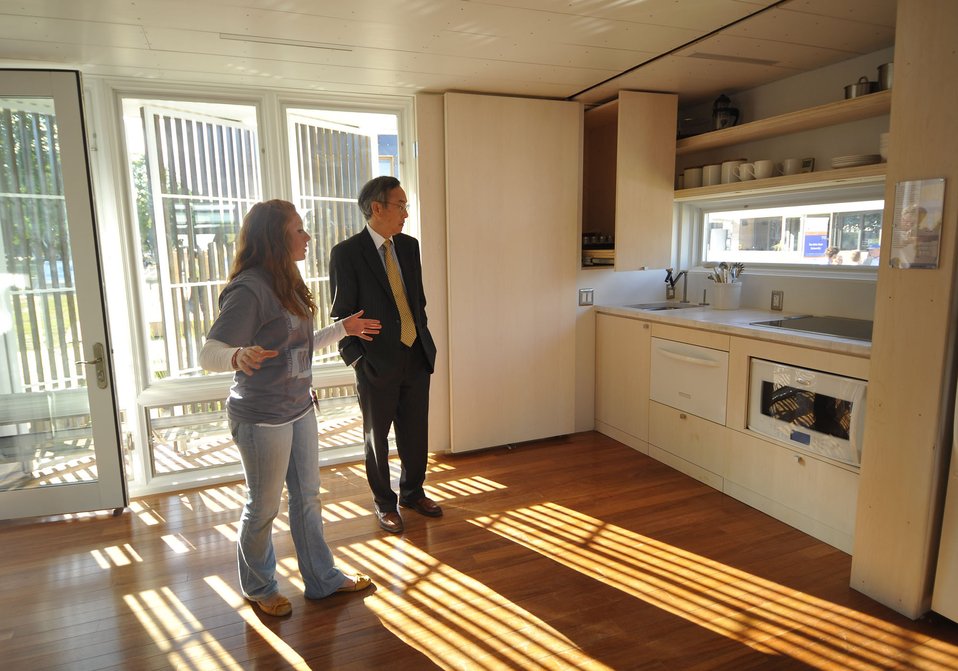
Solar Decathlon 2009 on the National Mall, with Sec. Chu

Solar Decathlon 09